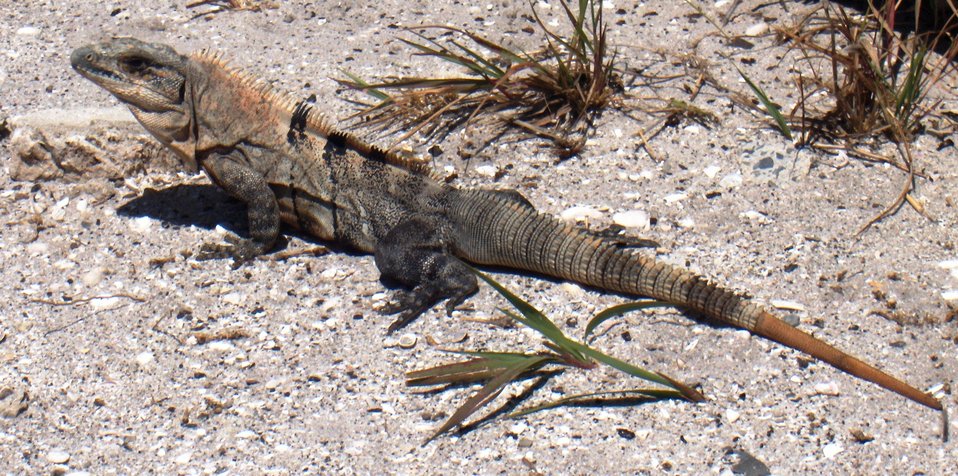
The spiny-tailed iguana is native to southern Mexico and Central America, however the release of three pet iguanas in 1979 has led to a populations of several thousand on Gasprilla Island in southwest Florida. In 2008, the U.S. Department of Agriculture's (USDA) Animal Plant Health and Inspection Service (APHIS) Wildlife Services (WS) experts and local officials started a concerted effort to eradicate the animals which compete with native wildlife and damage property. By 2011, more than 9,400 iguanas had been trapped and removed.